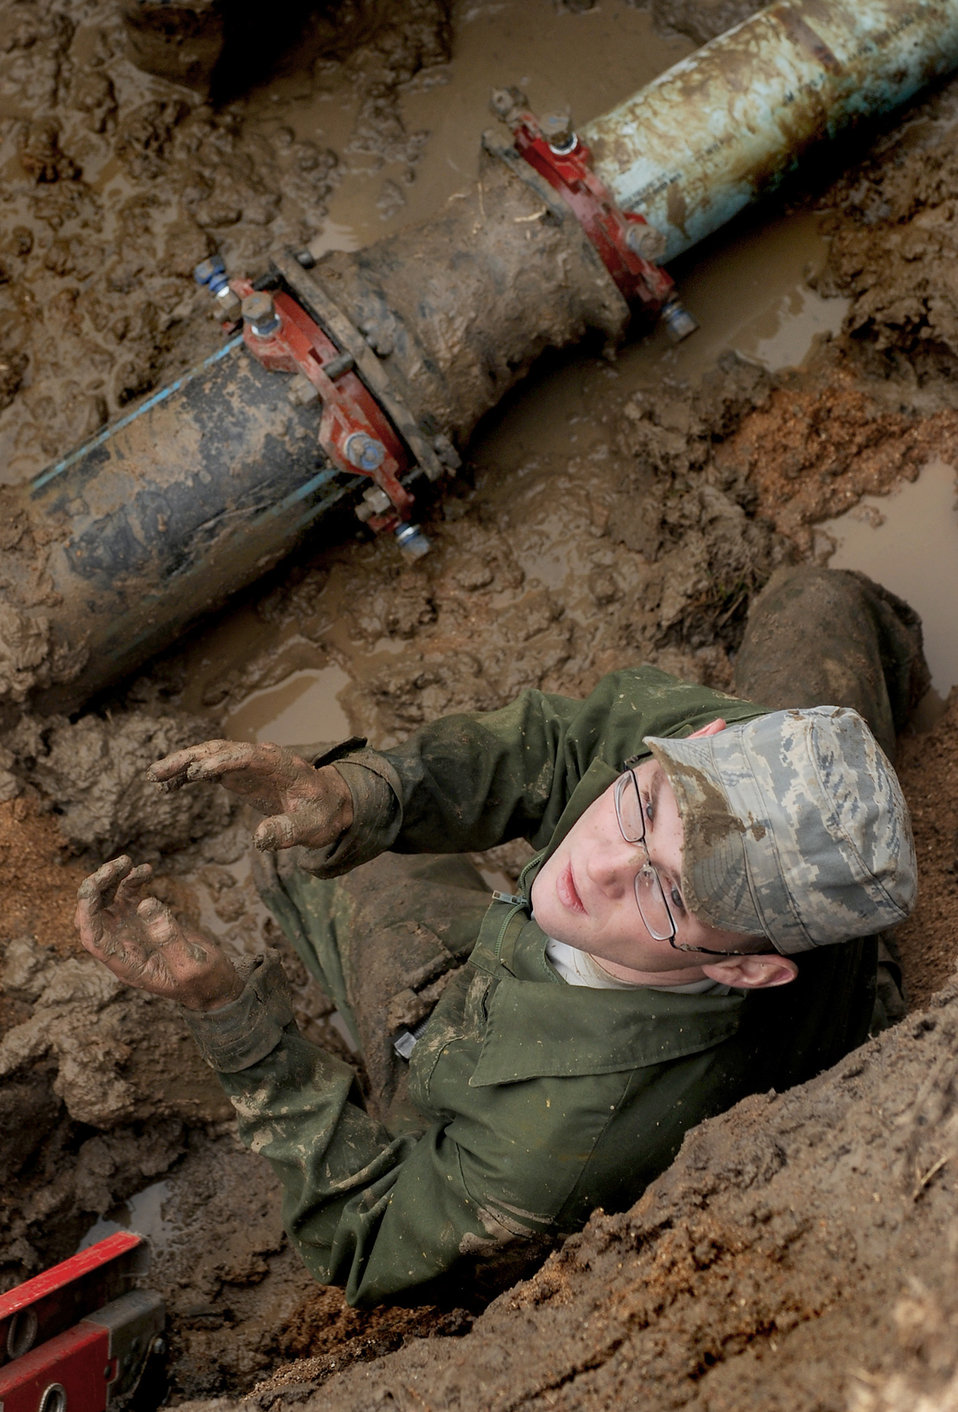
Maintenance specialists

Staff Sgt. Justin England reaches up to take tools from a co-worker in order to finish repairing a busted water main March 7, 2011, at Whiteman Air Force Base, Mo. Sergeant England is a maintenance specialist assigned to the 509th Civil Engineer Squadron.